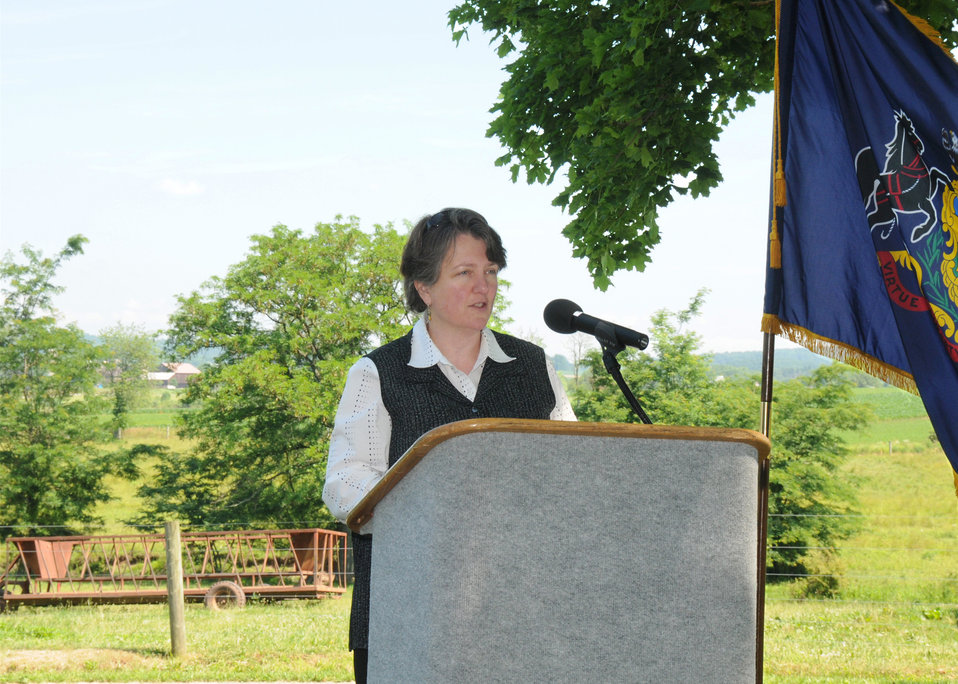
Agriculture Deputy Secretary Kathleen Merrigan announces the implementation of three showcase watersheds at the Eby-Patterson farm in Hershey, PA, on Friday, June 18, 2010. These watersheds are being established to demonstrate the effectives of water quality improvements in a confined geographic area using producer outreach efforts, innovative conservation practices, and intensive conservation planning, implementation, and monitoring. USDA photo 10di1409-84.